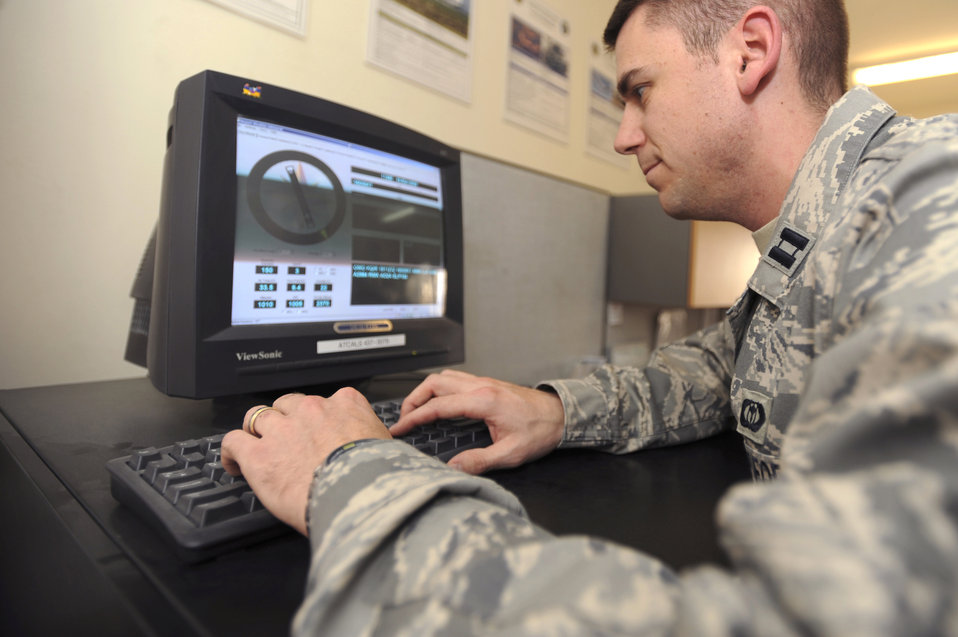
Servicemembers teaching others while deployed

Capt. Jeffrey Cunningham checks readings from an FM-Q19 Airfield Sensor here March 19. Captain Cunningham is scheduled to teach a meteorology course next semester and while still completing his normal duties. The FM-Q19 is an in-place instrument for reading wind direction, temperature and humidity on the airfield. Captain Cunningham is the 379th Expeditionary Operation Support Squadron Weather Flight commander.